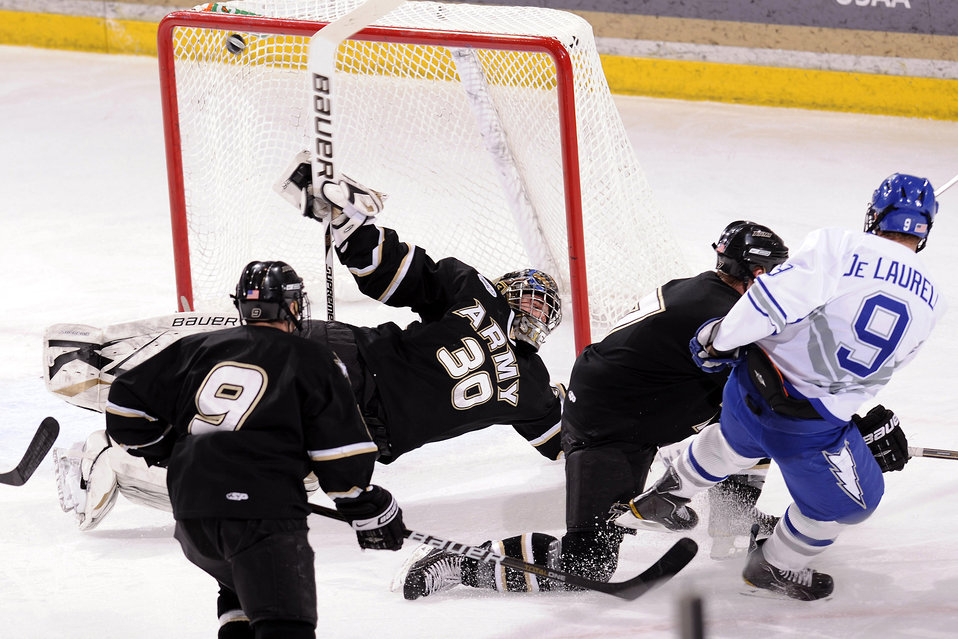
Falcons Split Two-Game Series

Air Force sophomore forward Kyle De Laurell just misses a shot on goal against Army goalie Ryan Leets during the Falcons' game against the Black Knights Jan. 15, 2011, at the Cadet Ice Arena. Army held off a late rally by the Falcons in the Jan. 15 game to defeat Air Force, 5-4.